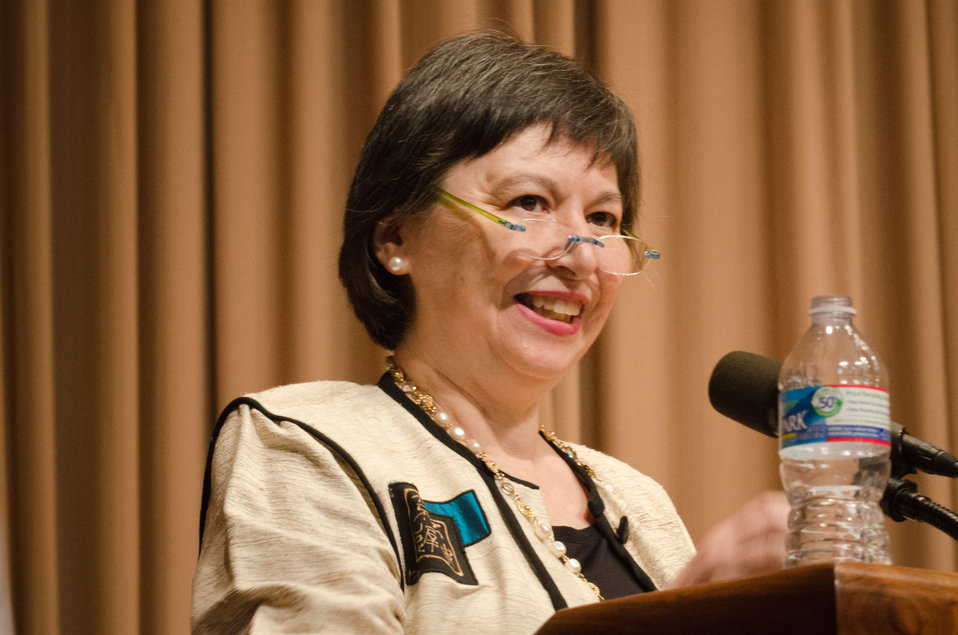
Agriculture Foreign Agricultural Services Associate Administrator Janet Nuzum offered opening remarks at the 2012 Asian Pacific American Heritage Observance “Striving for Excellence in Leadership, Diversity and Inclusion” at the U.S. Department of Agriculture in Washington, D.C. on Thursday, May 24, 2012.